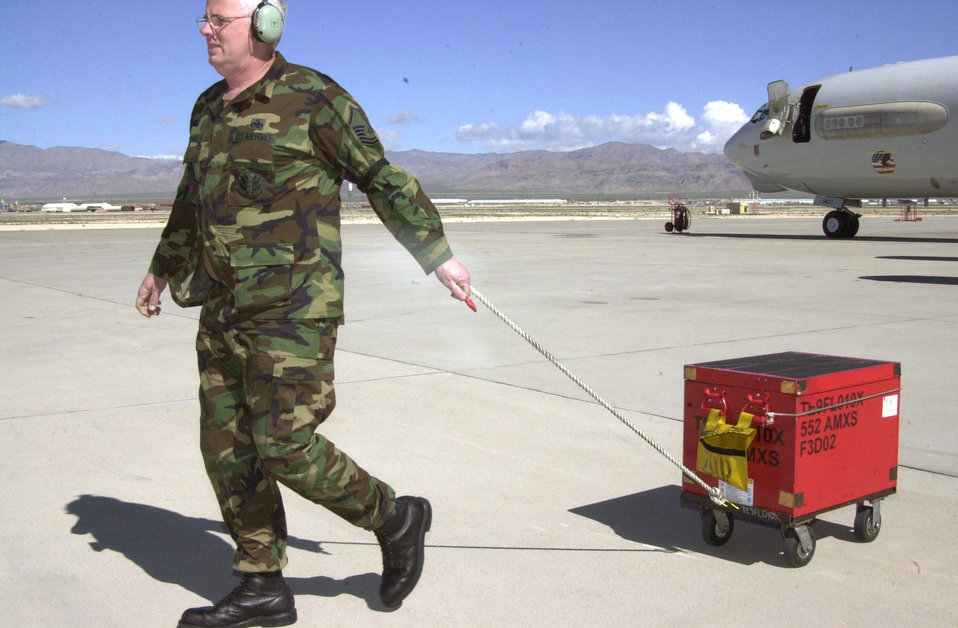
Reservist gets 'fit to fight'

At more than 100 pounds overweight as early as 1994, Master Sgt. Matt Thomas had a challenge ahead of him if he wanted to be fit to fight. After initiating a self-help program that included radical life changes in exercise and diet, he lost 122 pounds and shaved 13.5 inches off his abdominal circumference.